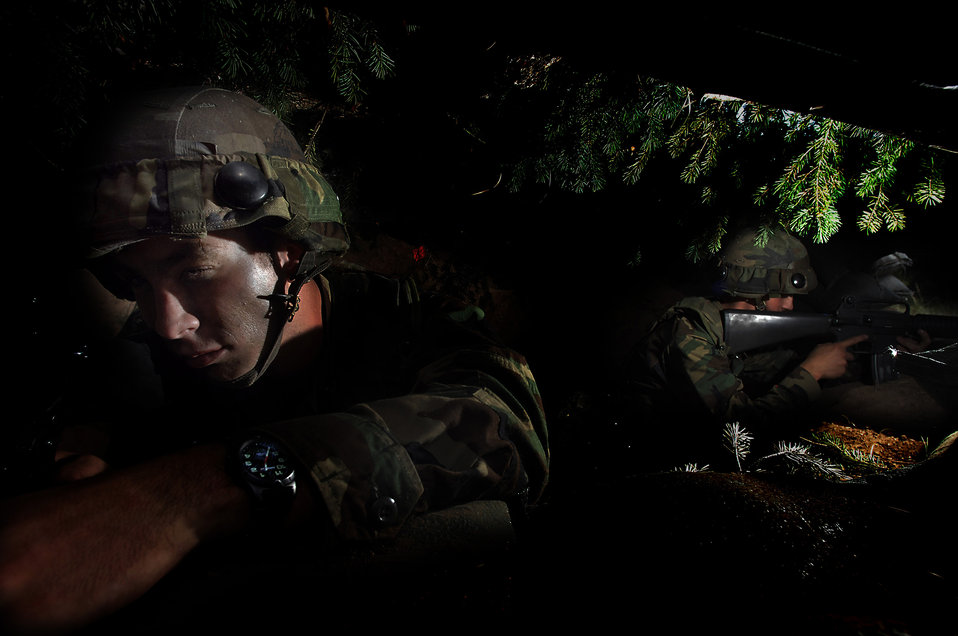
Global Engagement

Cadets Zach Colvin, left, and Ryan Legault scan for the